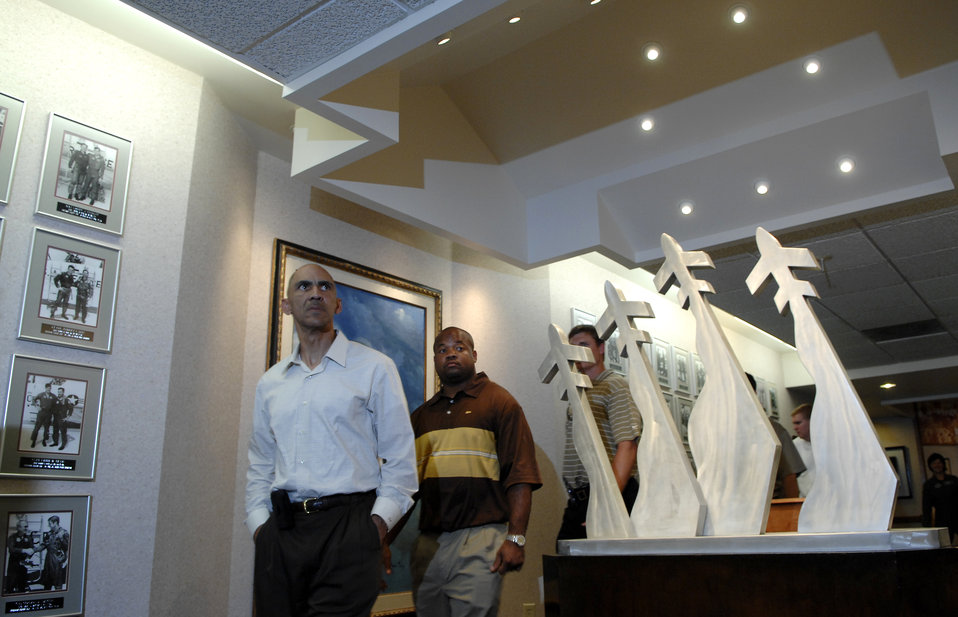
Indianapolis Colts visit Randolph Air Force Base

Indianapolis Colts head coach Tony Dungy (left), middle linebacker Gary Brackett and several other Colts players walk through the 560th Flying Training Squadron at Randolph Air Force Base, Texas, June 1. Colts team members spent the day visiting with base personnel and school children, enhancing the already strong relationship between the team and the Air Force.